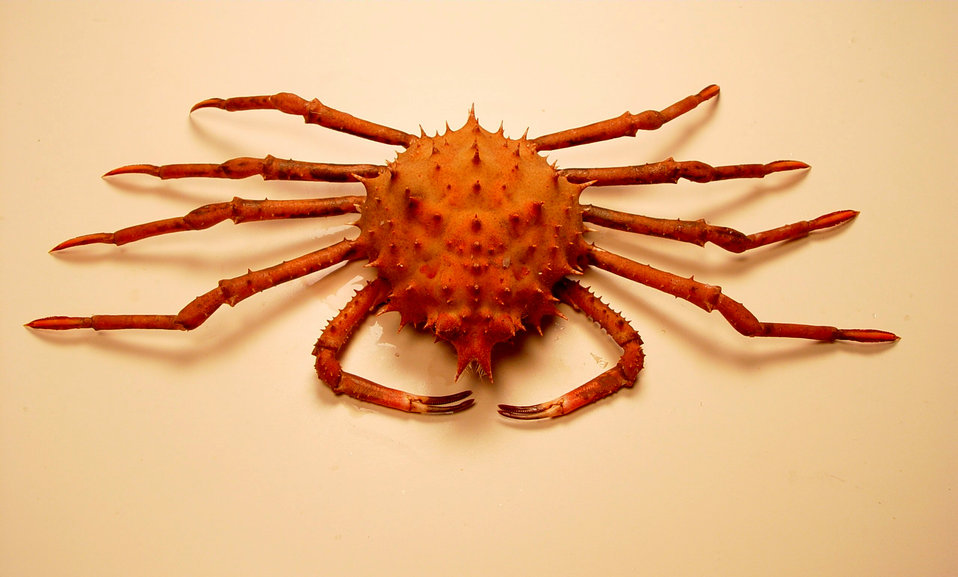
Inflated spiny crab ( Rochinia crassa )